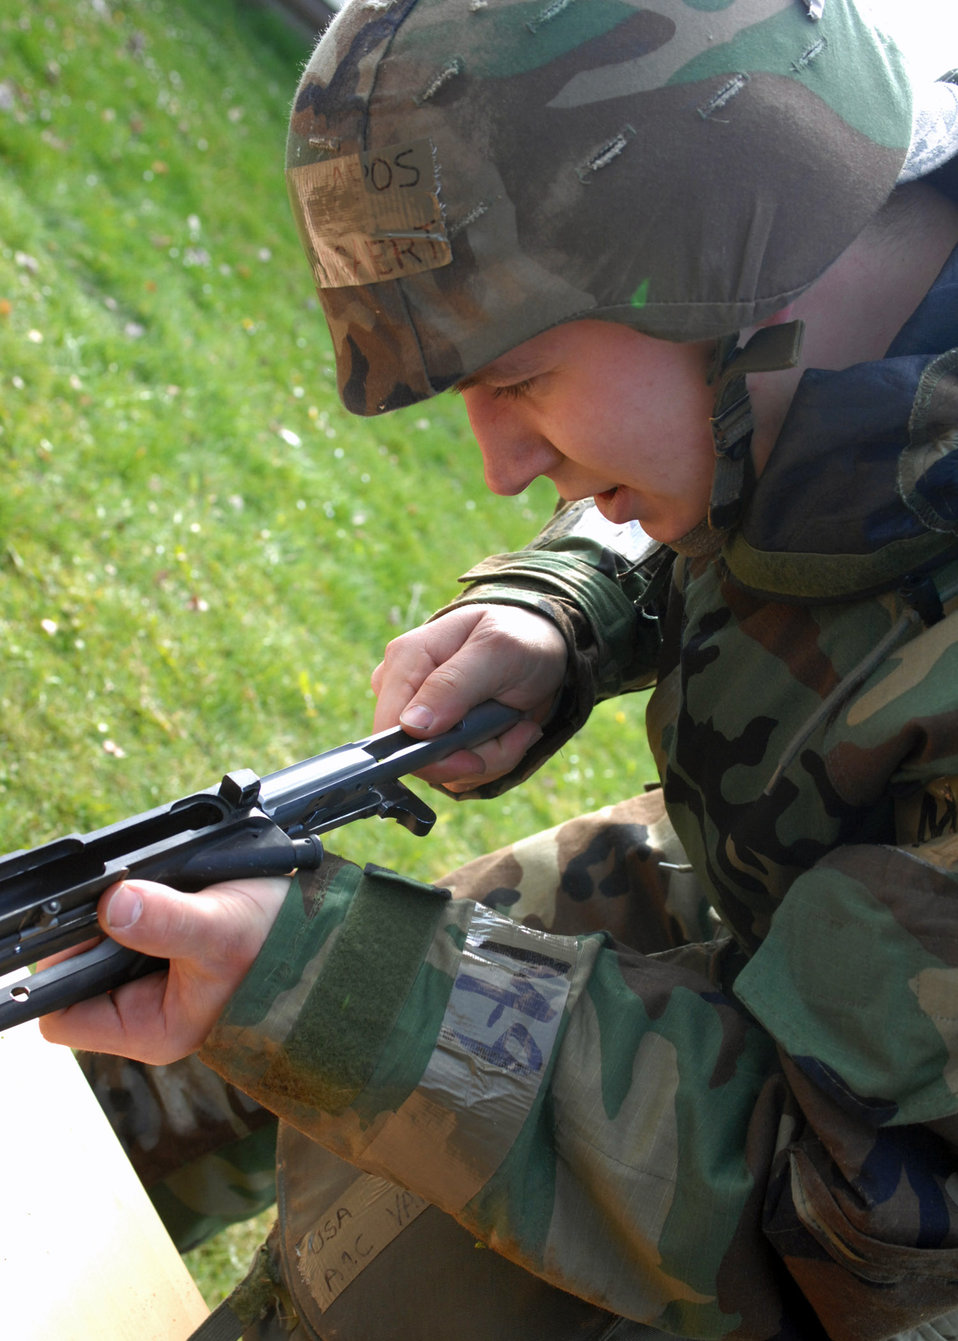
Operation Saber Crown 08-06 -- Ready to save lives, defend the base

Airman 1st Class Michael Van Bogaert assembles an M-16 at the last stop in a relay race at the ability to survive and operate rodeo during Operation Saber Crown 08-06 April 23. Participants in the relay race demonstrated the rush and roll, prone position, high-crawl, low-crawl and assembling and disassembling the M-16. Airman Van Bogaert is assigned to the 52nd Civil Engineer Squadron.